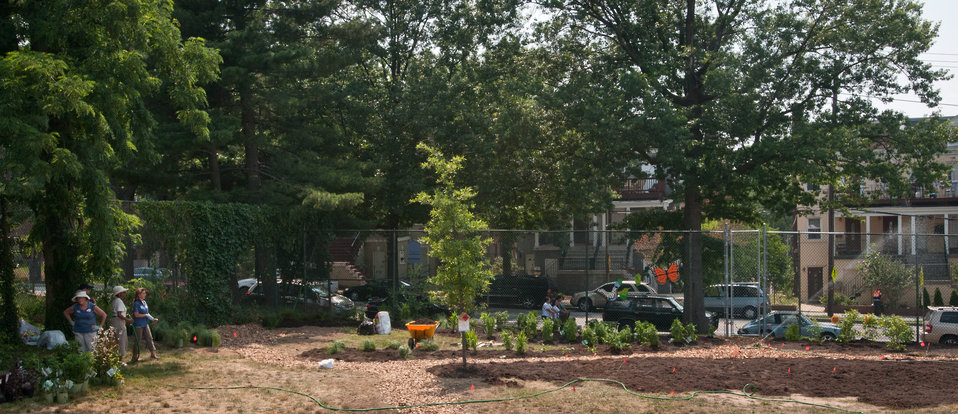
The completed portion of the People’s Garden at William B. Powell Elementary School is given it’s first watering on Thursday, June 9, 2011 in Washington, DC. Volunteers from U.S. Department of Agriculture People’s Garden Executive Master Gardener program and Washington Capitals hockey organization, along with defenseman Jeff Schultz, and mascot Slapshot transformed a grassy corner of the Powell Elementary School playground into a habitat garden and outdoor learning area. The 100 degree heat index and harder than expected soil, contributed to only 60% of the planned projects being completed. The completed projects included a walking path; tiling of garden plots; planting a monarch butterfly watch garden; caterpillar and butterfly plaques; hummingbird and bat houses, and tool shed. The garden will later include a picnic area, outdoor classroom, hummingbird garden, bird habitat, and native bee garden, and birdbath. Executive Master Gardeners led the volunteer project teams. USDA challenges its employees to establish People's Gardens at USDA facilities worldwide or on this case, help communities create gardens. People's Gardens vary in size and type, but all have a common purpose - to help the community and the environment.